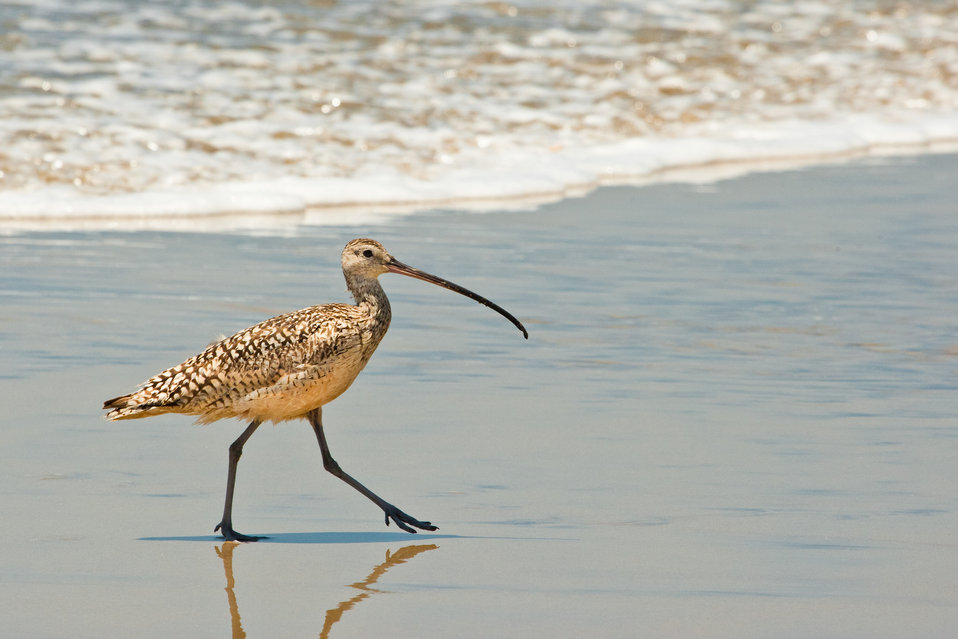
Long-billed curlew

A long-billed curlew takes a stroll while searching for mollusks and crustaceans along the tideline near the US/Mexico border fence